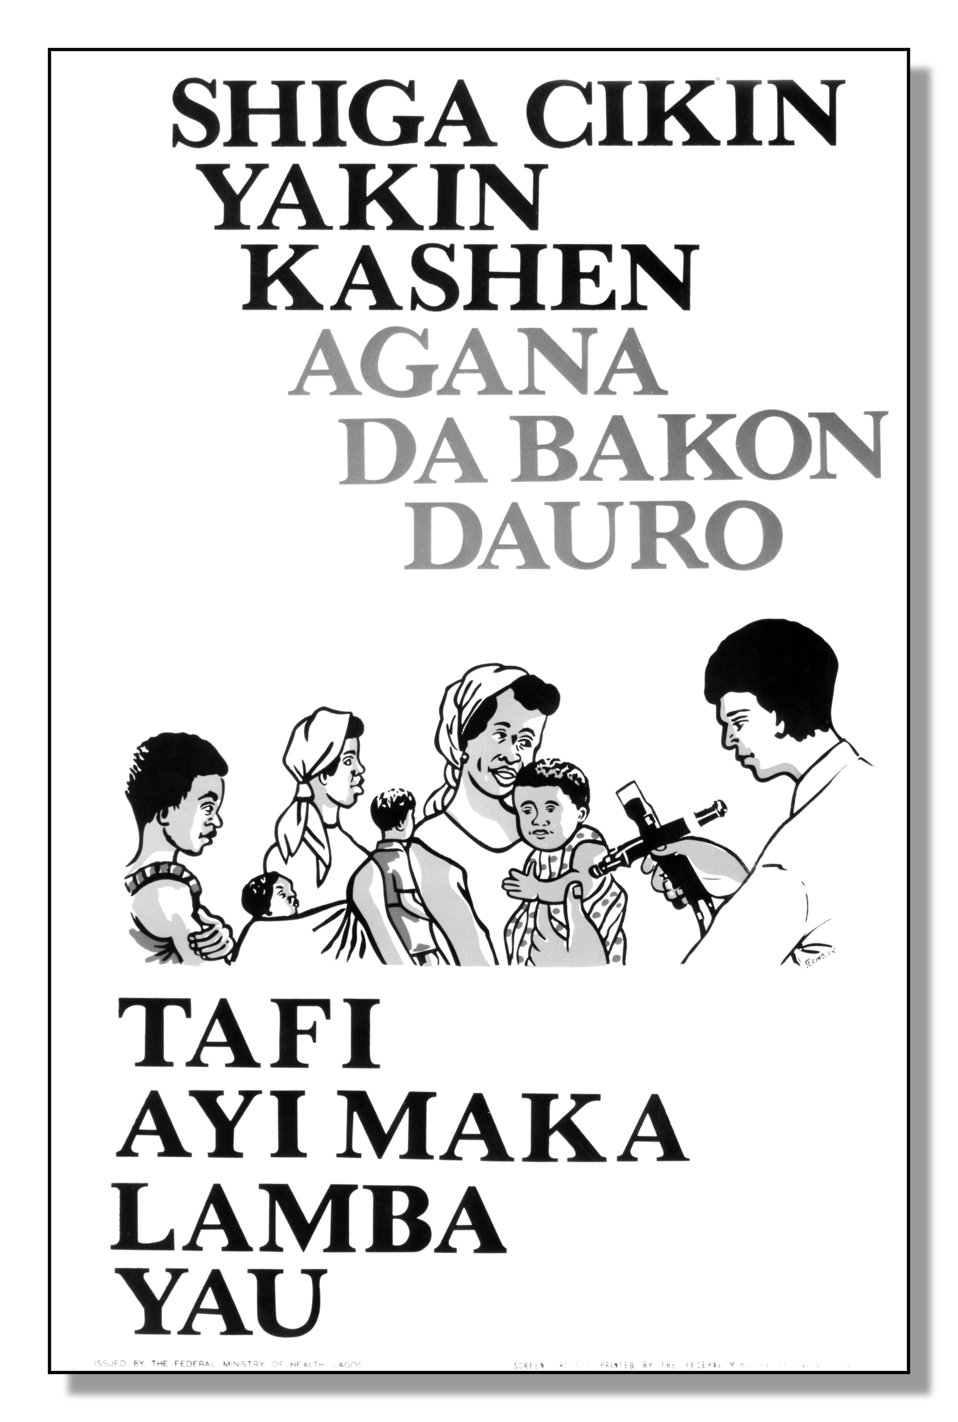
Early pre-1979 poster created to promote the importance of Smallpox and Measles vaccinations in foreign lands.